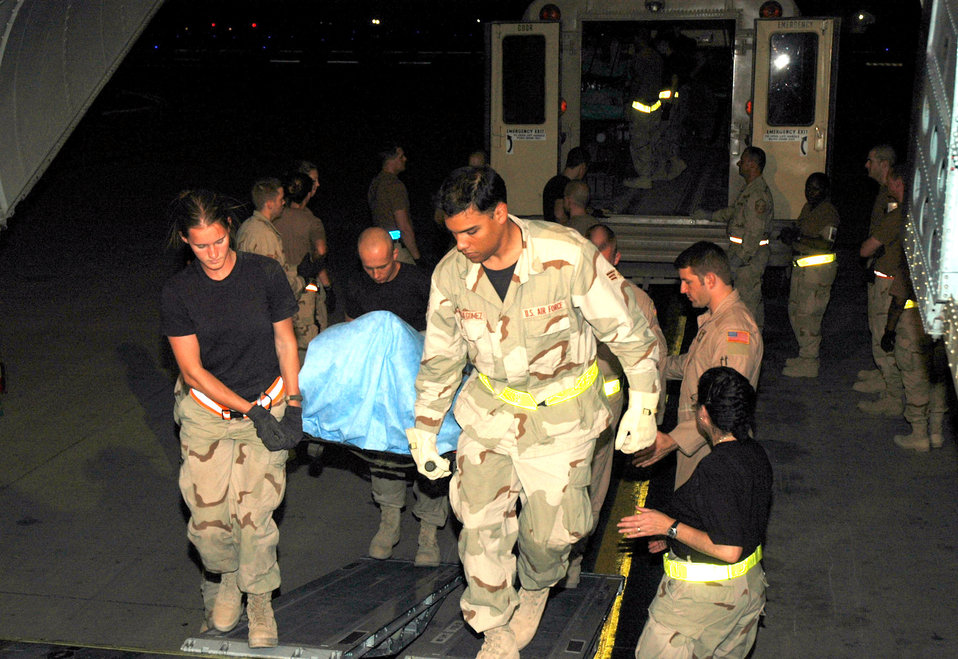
Staging facility takes over where hospital leaves off

BALAD AIR BASE, Iraq -- Volunteers here help Airmen with the 332nd Expeditionary Medical Group's contingency aeromedical staging facility move patients onto ambulance-type buses equipped with necessary medical supplies.